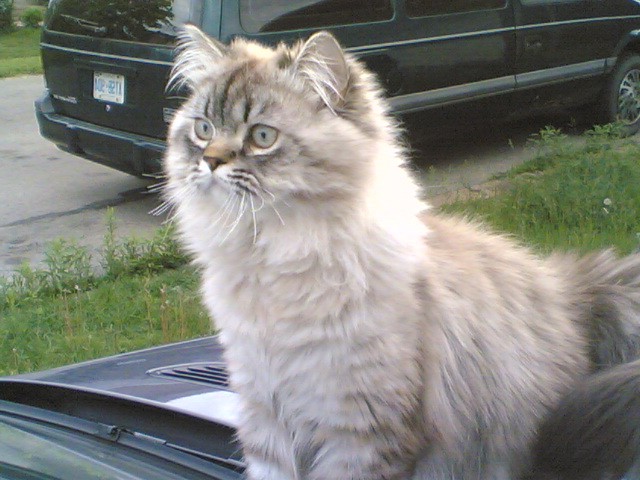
This picture is of my 1 year old Seal Lynx Point Persian